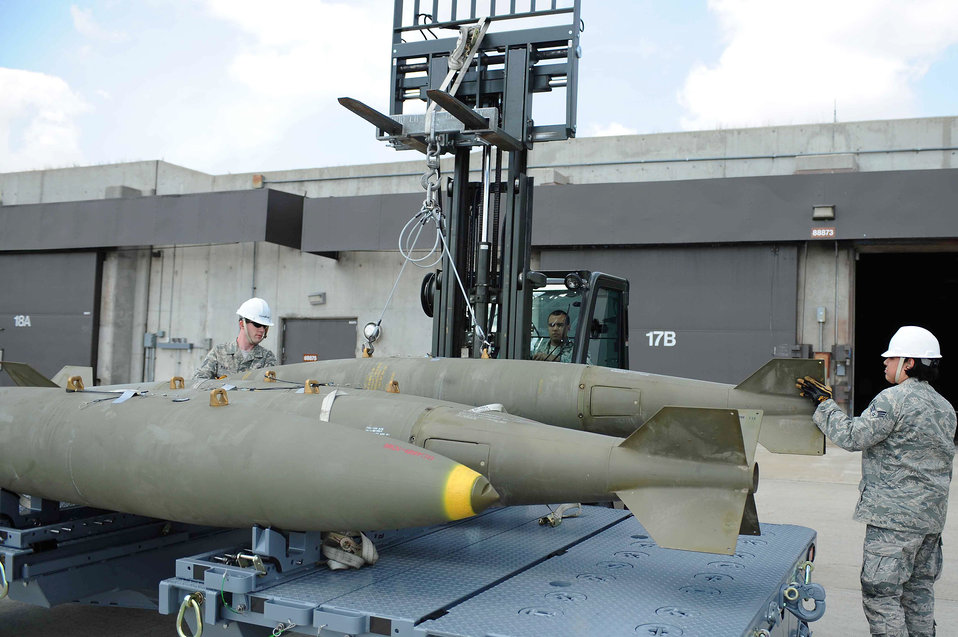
Warehousing the Mark 84 bomb

Munitions crewmembers move a 2,000 pound Mark 84 bombs April 21, 2010, at Ellsworth Air Force Base, S.D.